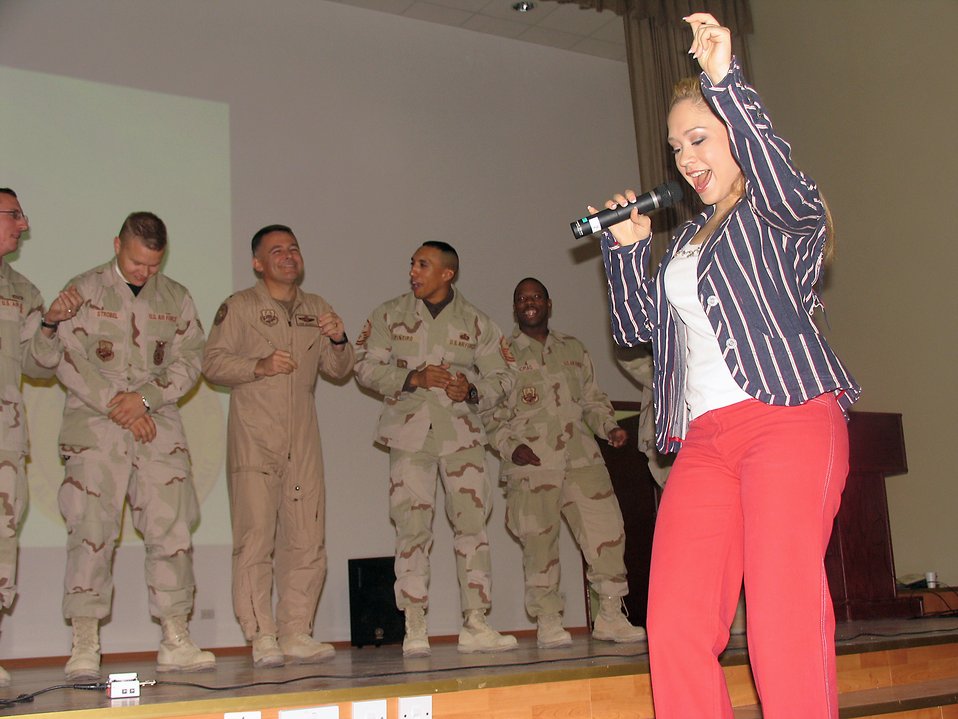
Visit with the troops

SOUTHWEST ASIA (AFPN) -- Singer Diana DeGarmo performs for troops during the Chairman of the Joint Chiefs of Staff' holiday tour to the region. The tour was sponsored by the United Service Organizations and visited bases throughout Southwest Asia and Africa. Other performers included comedian Reggie McFadden, country music artist Michael Peterson and Medal of Honor recipient Col. Jack Jacobs.